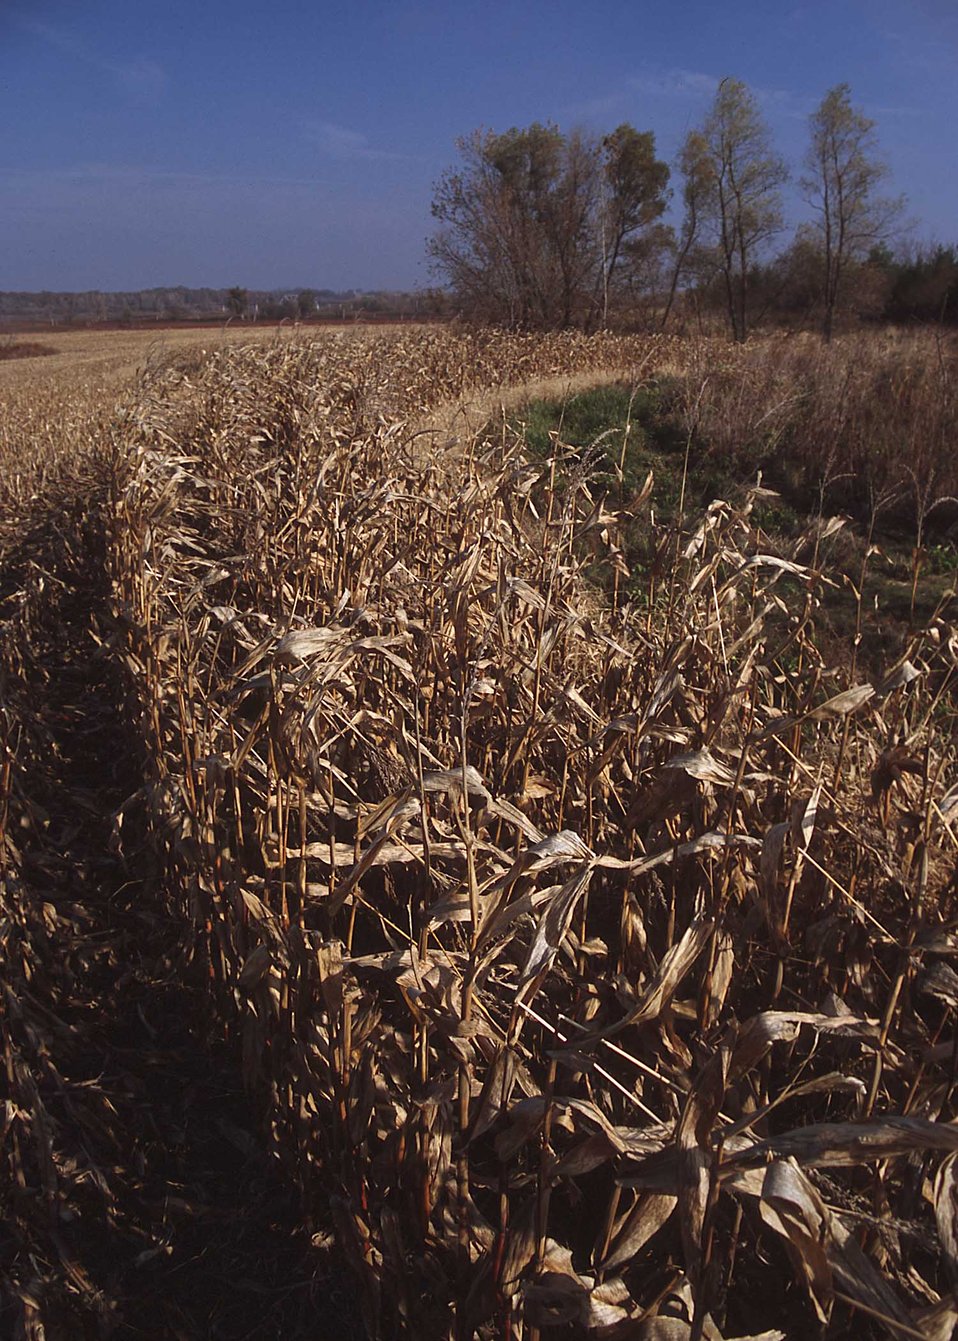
Landowners especially interested in wildlife may want to plant corn or other grain as food plots near escape cover asr winter food for wildlife.